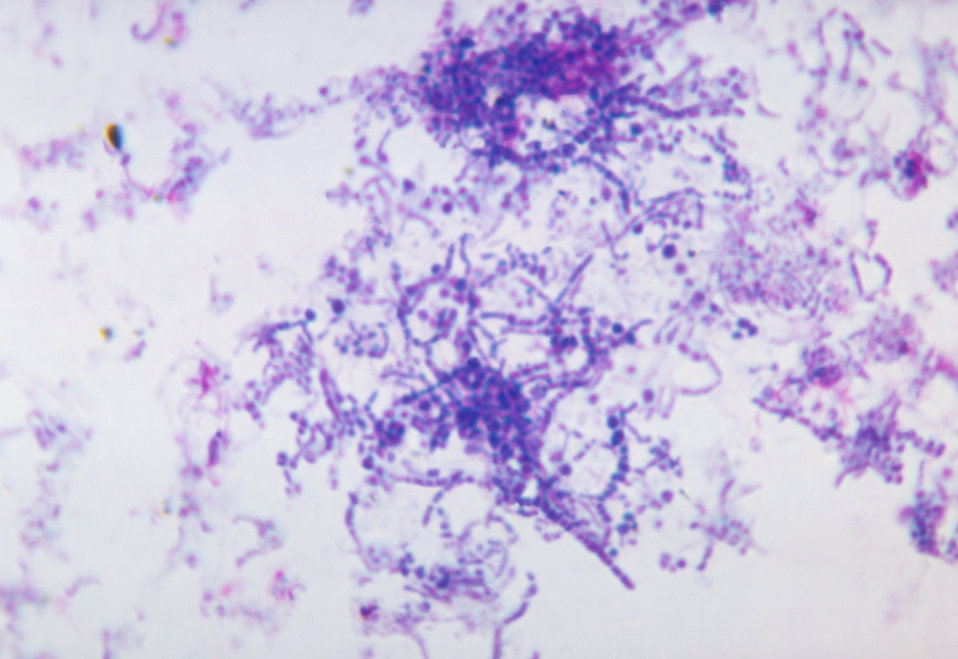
This is a photomicrograph of Dermatophilus congolensis bacteria using a Giemsa stain.